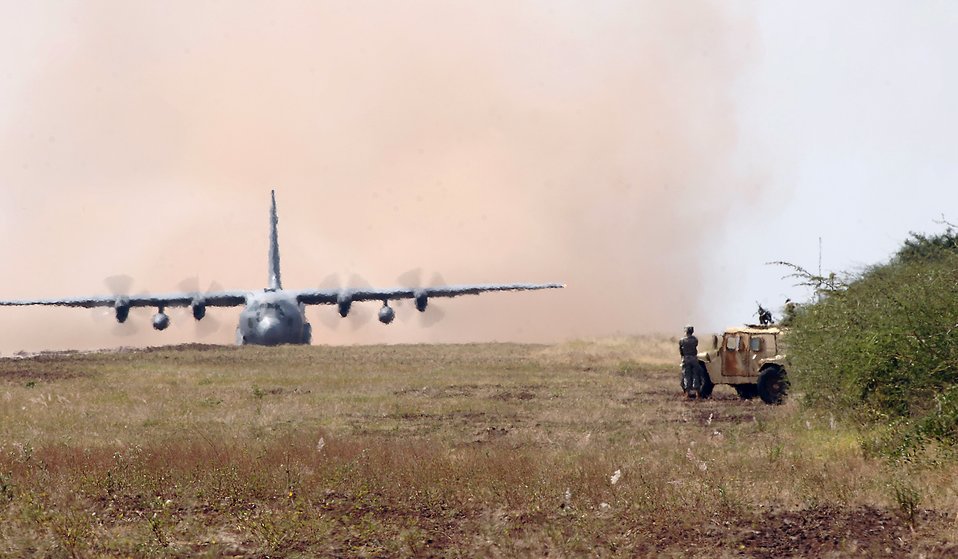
HOA 'Flex' mission

A C-130 Hercules lands on a 4,500-foot dirt landing strip in southern Ethiopia. The runway, lined with lava rock native to the area, is the only means of delivering passengers and cargo to a U.S. contingency operating base in the remote village of Bilate, Ethiopia where Guam Army National Guardsman, Airmen and Sailors work to provide military training to Ethiopian forces in the region. The C-130 and crew are deployed to the Horn of Africa from Elmendorf Air Force Base, Alaska.